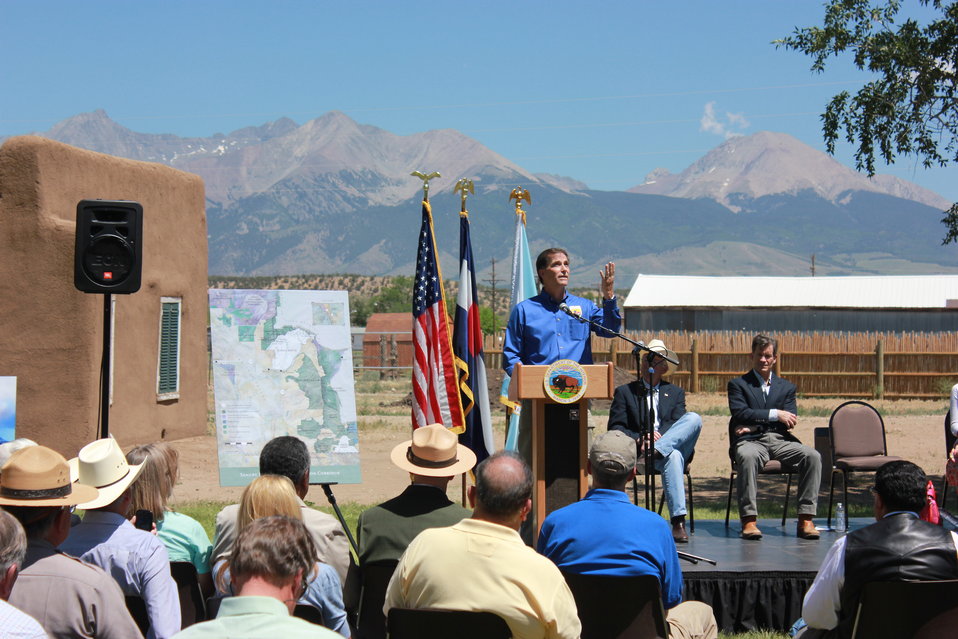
Historic Conservation Easement in Sangre de Cristo Mountains